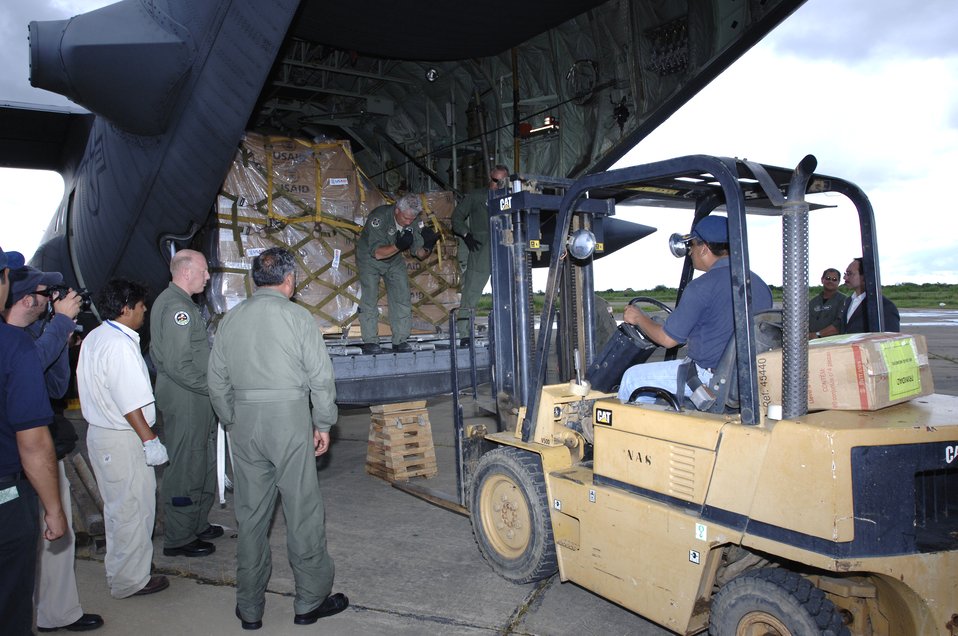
Flooded Bolivia gets humanitarian relief

Airmen and local relief workers offload humanitarian supplies from a C-130 Hercules March 5 in Trinidad, Bolivia. U.S. Southern Command, in cooperation with the U.S. Agency for International Development, is delivering supplies in response to widespread flooding in the northern and eastern parts of Bolivia.